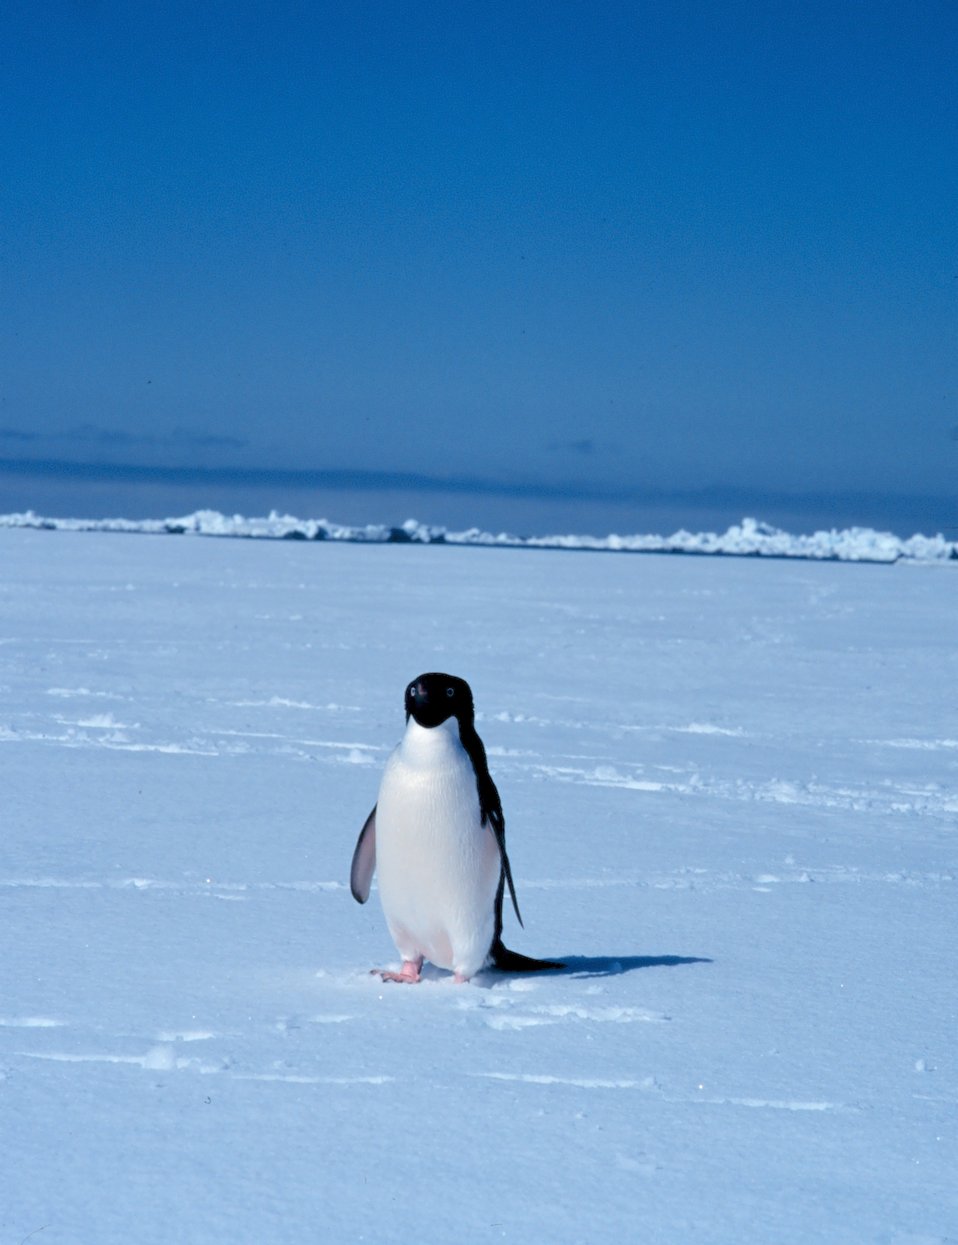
Adelie penguin.